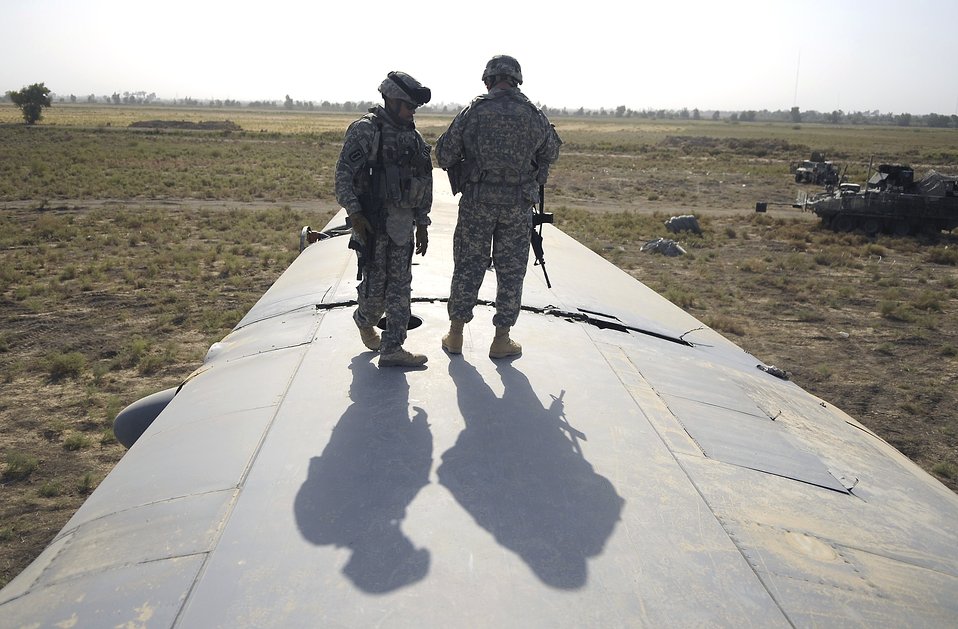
Operation Iraqi freedom

Senior Master Sgt. Pervis King, left, and Staff Sgt. Joshua Langdon from the 447th Air Expeditionary Group's Explosive ordnance disposal team inspect explosive charges placed around the wings of the of a C-130 Hercules aircraft that are designed to divide the plane into smaller sections so it can be moved July 7 in Baghdad, Iraq. The C-130 made an emergency landing in a field north of the Baghdad International Airport shortly after take-off on June 27.